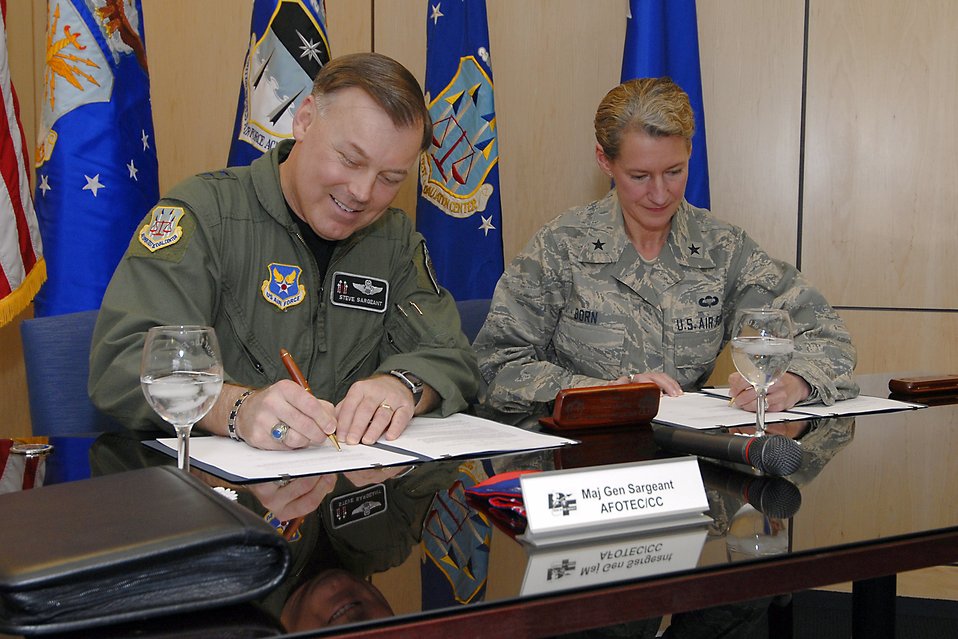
Air Force officials launch new mentoring program

Maj. Gen. Stephen T. Sargeant (from left) and Brig. Gen. Dana H. Born sign a memorandum of agreement creating a mentoring program between the Air Force Operational Test and Evaluation Center and the U.S. Air Force Academy during a formal signing ceremony March 17 at the Academy in Colorado Springs, Colo. General Sargeant is the Air Force Operational Test and Evaluation Center commander from Kirtland Air Force Base, N.M., and General Born is the U.S. Air Force Academy dean of faculty.